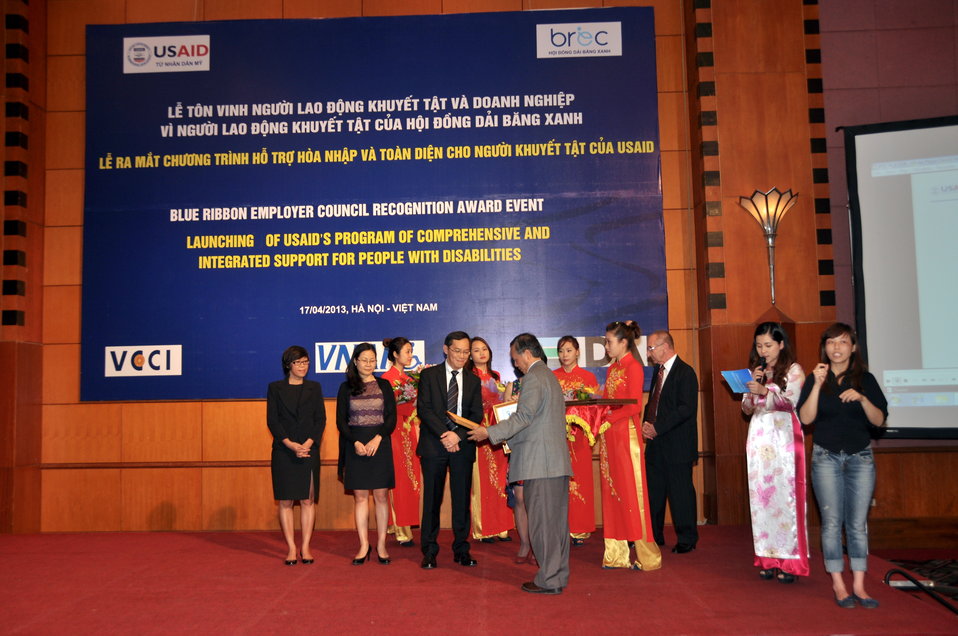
Blue Ribbon Employer Council Awards for Hiring Vietnamese with Disabilities

Hanoi, April 17, 2013